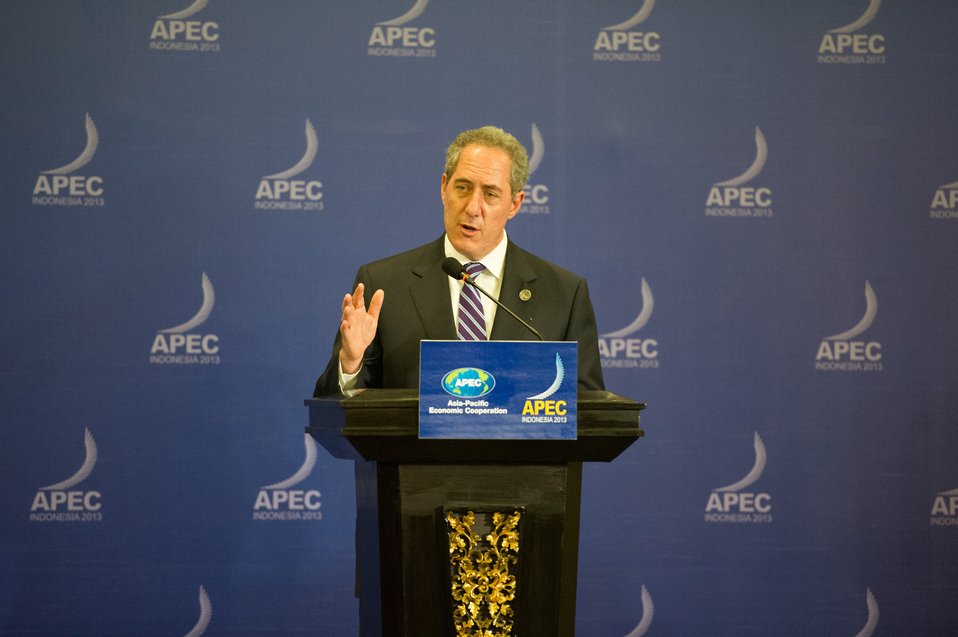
Ambassador Froman Speaks to the Media at the APEC Ministerial in Indonesia

U.S. Trade Representative Ambassador Michael Froman addresses the press during the APEC Ministerial meetings in Bali, indonesia, October 5, 2013.